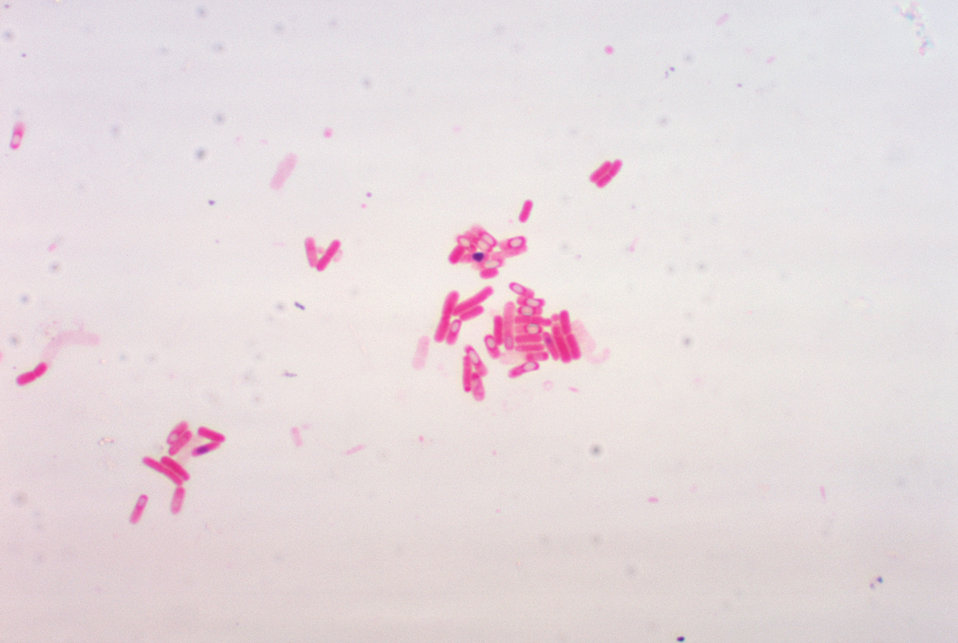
Bacillus brevis showing spores. Gram stain.